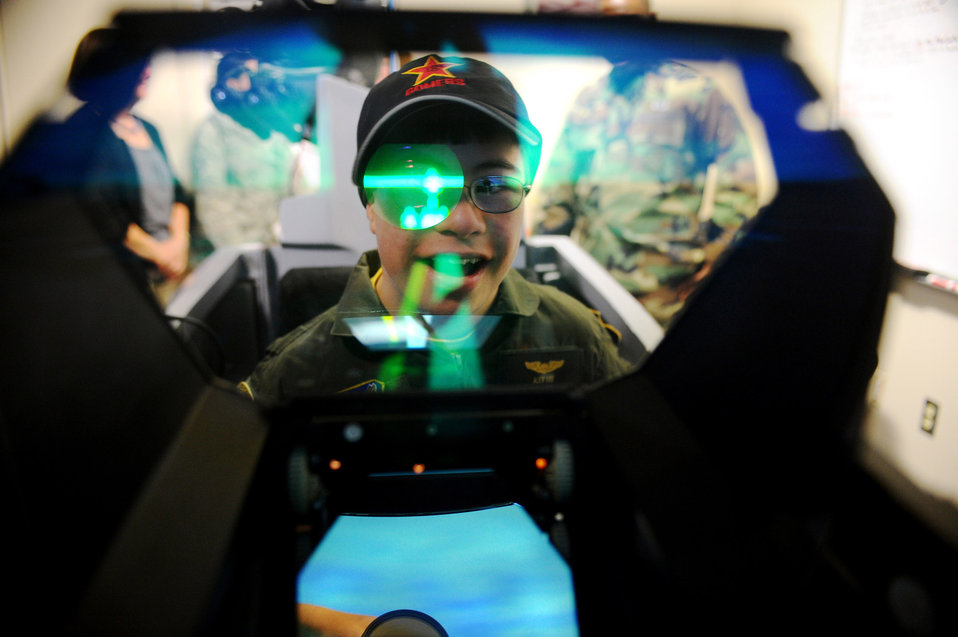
Eielson Airmen turn child into pilot for a day

Alex Lee looks through an F-16 Fighting Falcon simulator head-up display during a simulated mission Aug. 22 at Eielson Air Force Base, Alaska. Alex was born with congenital heart defects and Down syndrome and was selected by the Make-A-Wish Foundation for the Pilot for a Day program. The purpose of the program is to ease the pain of children who lost a normal childhood due to illnesses or disabilities.